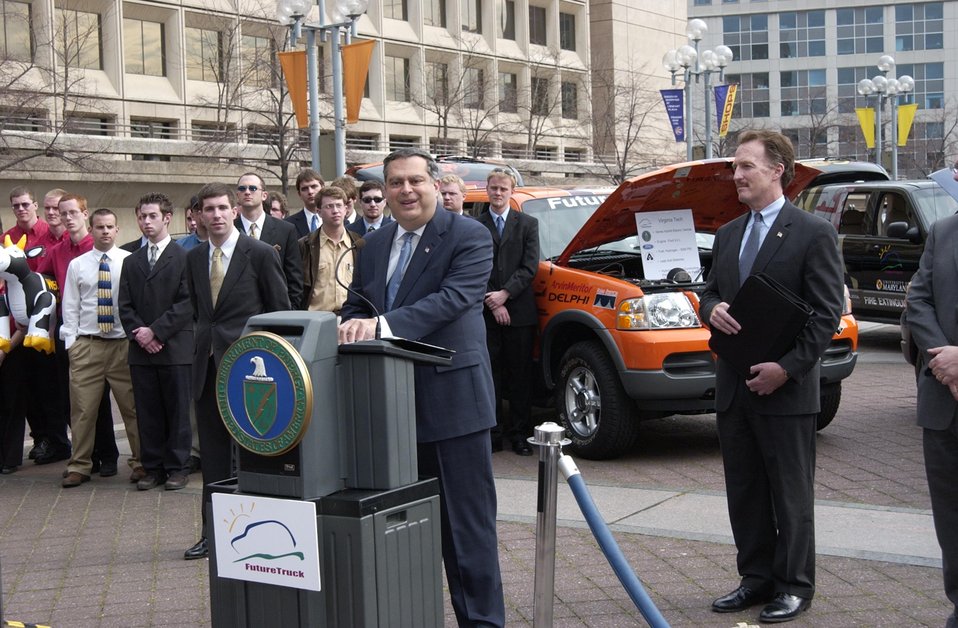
SECRETARY ABRAHAM ADDRESSING STUDENTS OUTSIDE OF DOE HEADQUARTERS WHILE ASSISTANT SECRETARY GARMAN LOOKS ON.

ON MARCH 24, 2004, SECRETARY OF ENERGY ABRAHAM AND THE FORD MOTOR COMPANY HOSTED SEVEN STUDENT DESIGNED ENERGY EFFICIENT SPORT UTILITY VEHICLES (SUVS) PARKED OUTSIDE OF DOE HEADQUARTERS IN WASHINGTON, DC. THE STUDENT TEAMS, PART OF THE FUTURE TRUCK 2004 ENGINEERING COMPETITION, RE-ENGINEERED FORD EXPLORERS TO ACHIEVE LOWER-EMISSIONS AND AT LEAST 25% HIGHER FUEL ECONOMY, WITHOUT SACRIFICING PERFORMANCE, UTILITY AND SAFETY. THE UNIVERSITIES THAT PARTICIPATED WERE OHIO STATE, PENN STATE, MARYLAND, TENNESSEE, WISCONSIN-MADISON, VIRGINIA TECH AND WEST VIRGINIA.